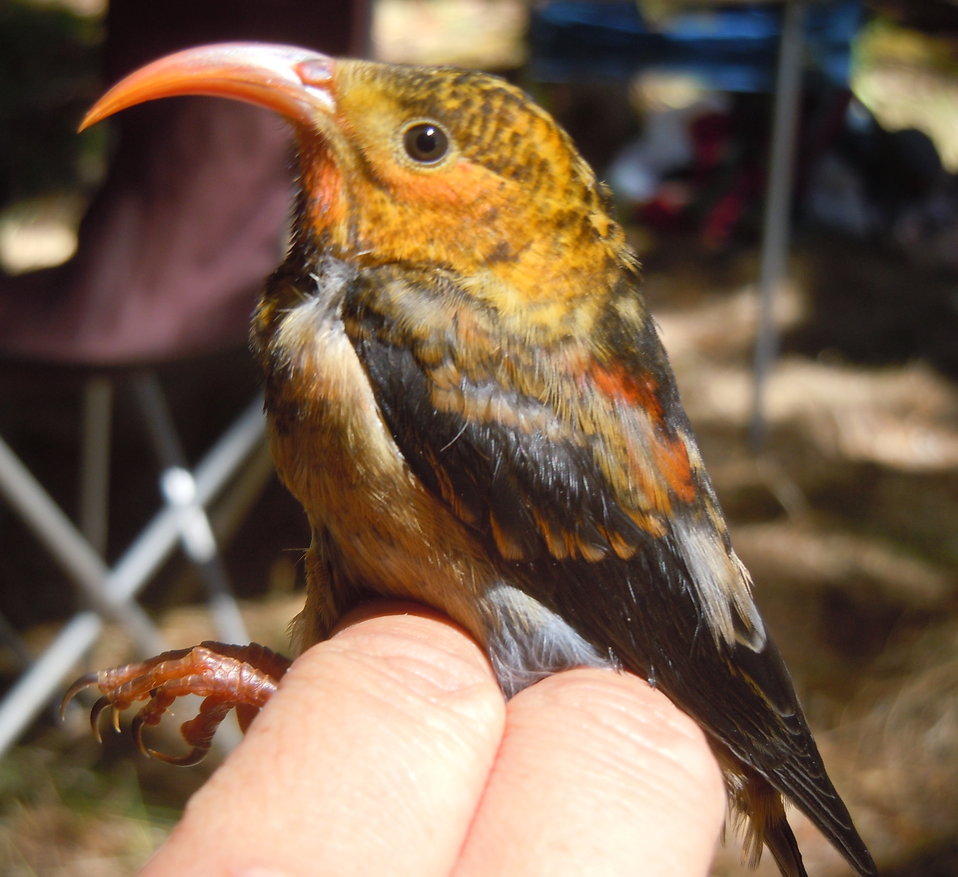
young i'iwi

The endangered i'iwi is one of the Hawaiian honeycreeper species. They evolved in the forests of Hawai'i and are found nowhere else in the world. This bird was banded and released back to the forest.
Hakalau Forest National Wildlife Refuge, HI
March 2012